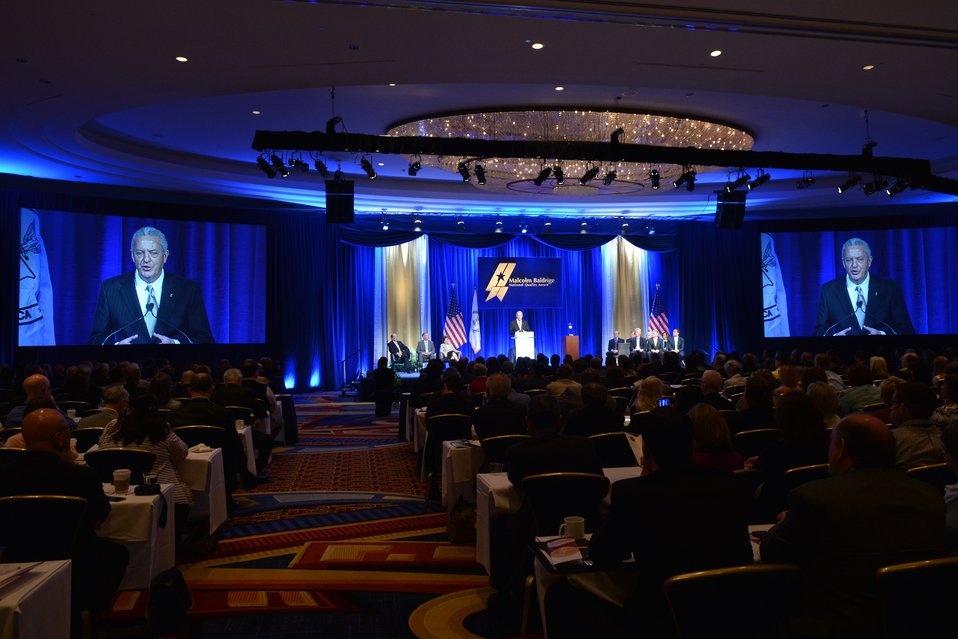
2012 Baldrige Ceremony James F. Berry LMFC Speaking

2012 Baldrige Award Ceremony; James F. Berry, President, Lockheed Martin Missiles and Fire Control; April 8, 2013, Baltimore Marriott Waterfront